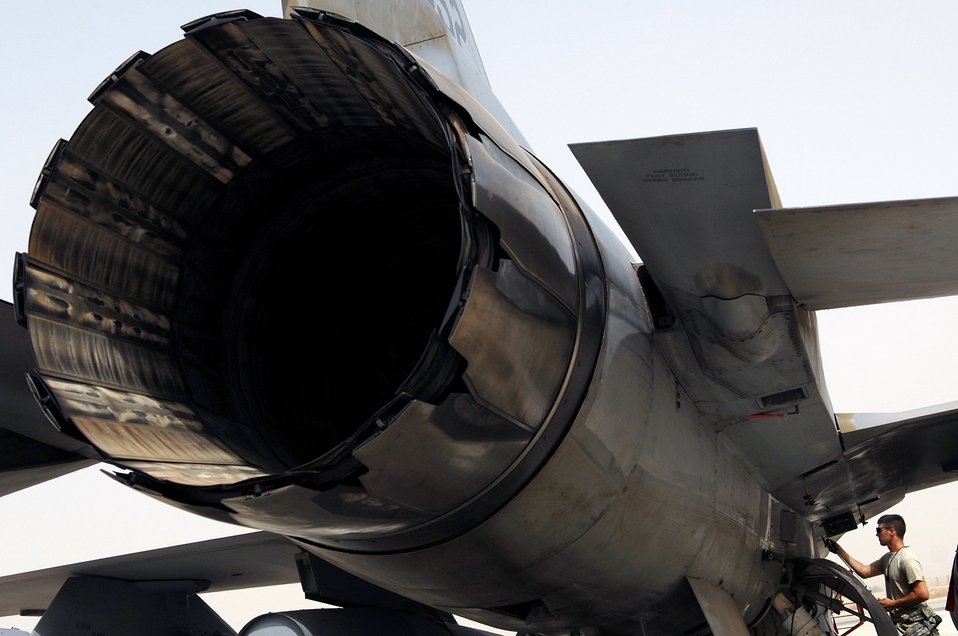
Gentlemen, start your engines!

Senior Airman Sean Weygandt screws in a panel on an F-16 Fighting Falcon before running up the engine July 16 at Joint Base Balad, Iraq. The run up of the engine back and forth from full afterburner to idle allows the engine mechanics and crew chiefs to ensure all systems are fully functional before putting the fighter back into operational use. Airman Weygandt is a 77th Aircraft Maintenance Unit engine mechanic deployed from Shaw Air Force Base, S.C.